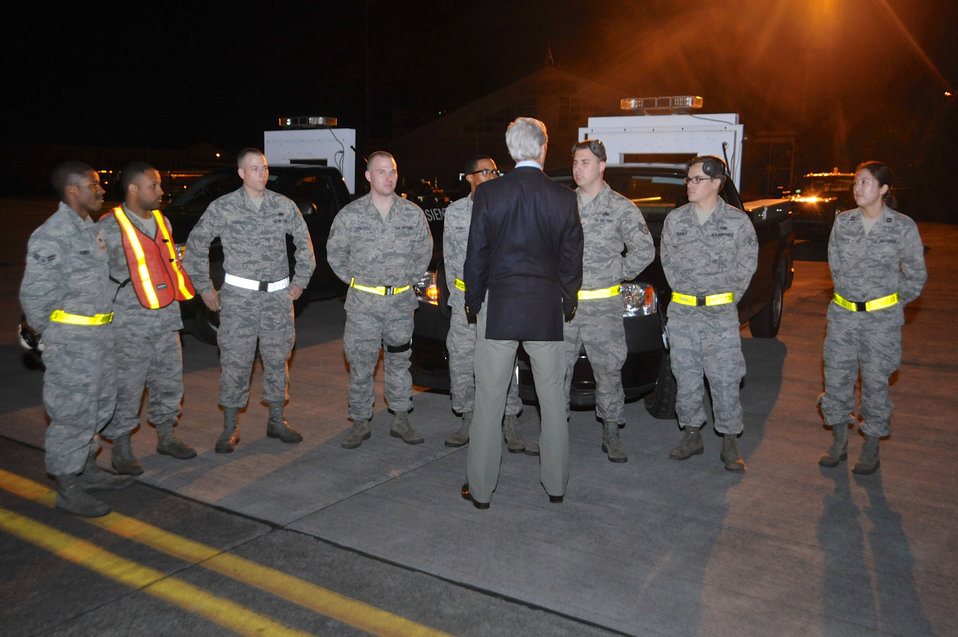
Secretary Kerry Chats With U.S. Airmen

U.S. Secretary of State John Kerry chats with U.S. Airmen at Yokota Air Base in Japan on July 3, 2013, while making a refueling stop en route to Washington, D.C., during the final legs of a 12-day, around-the-world trip.